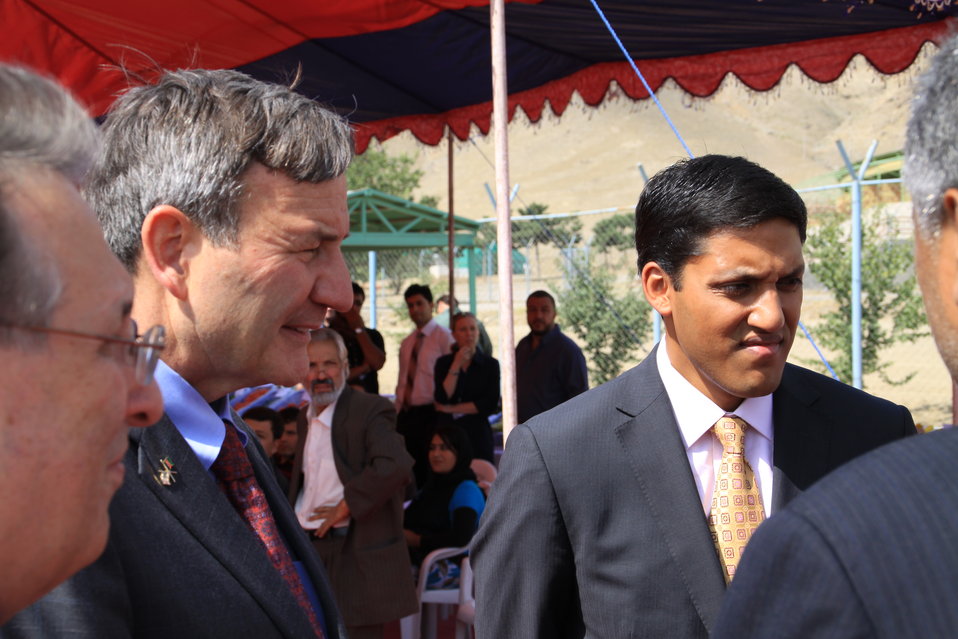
Badam Bagh Farm